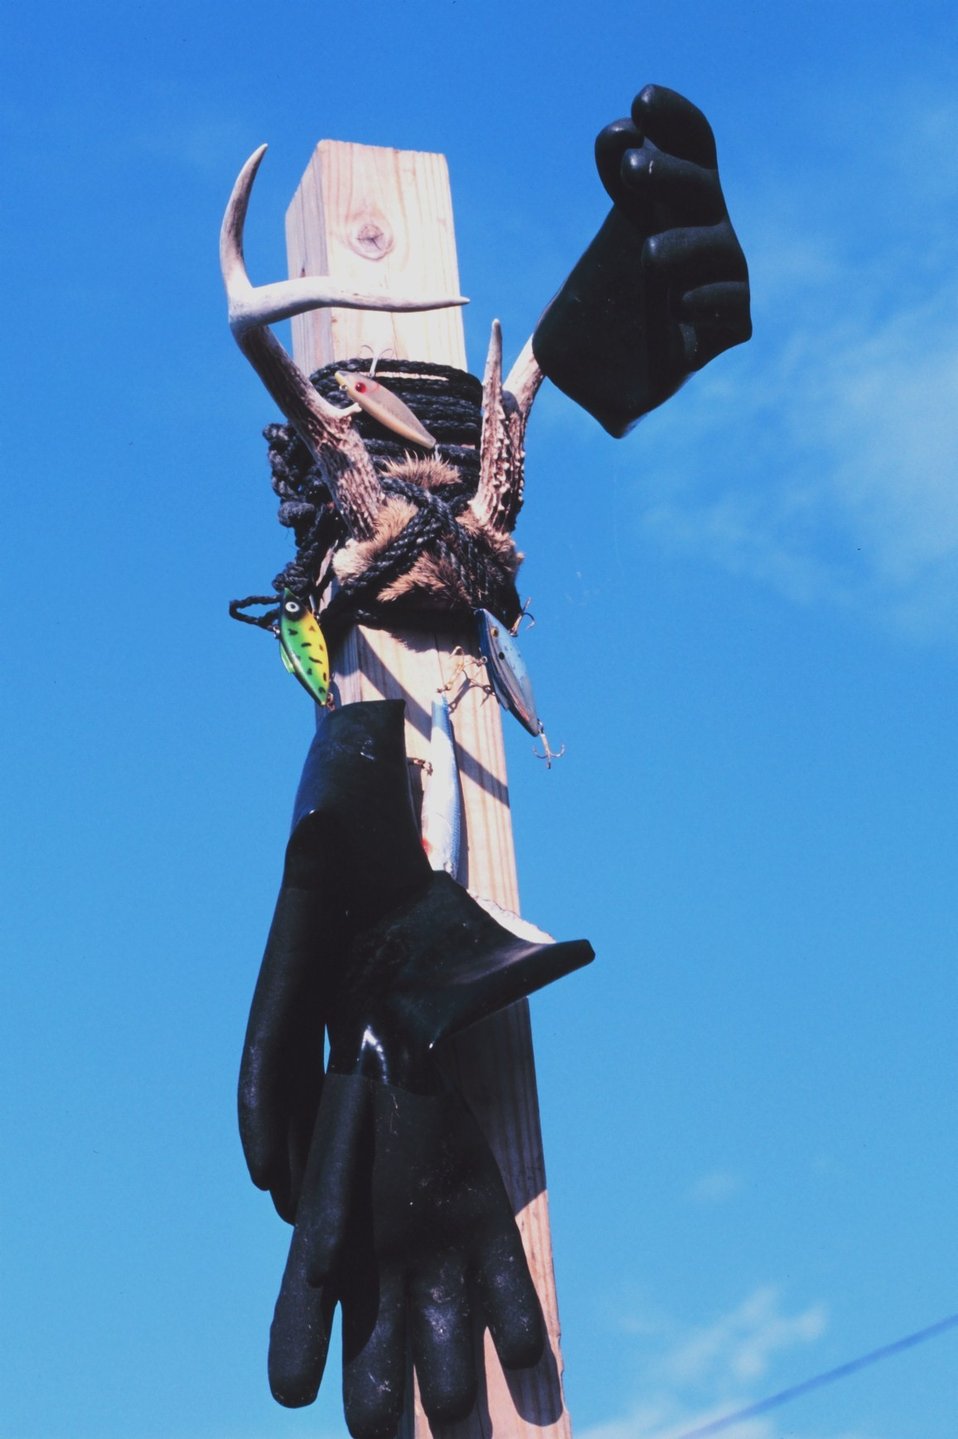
Modern art? or fishermen's gear? Scene on a piling